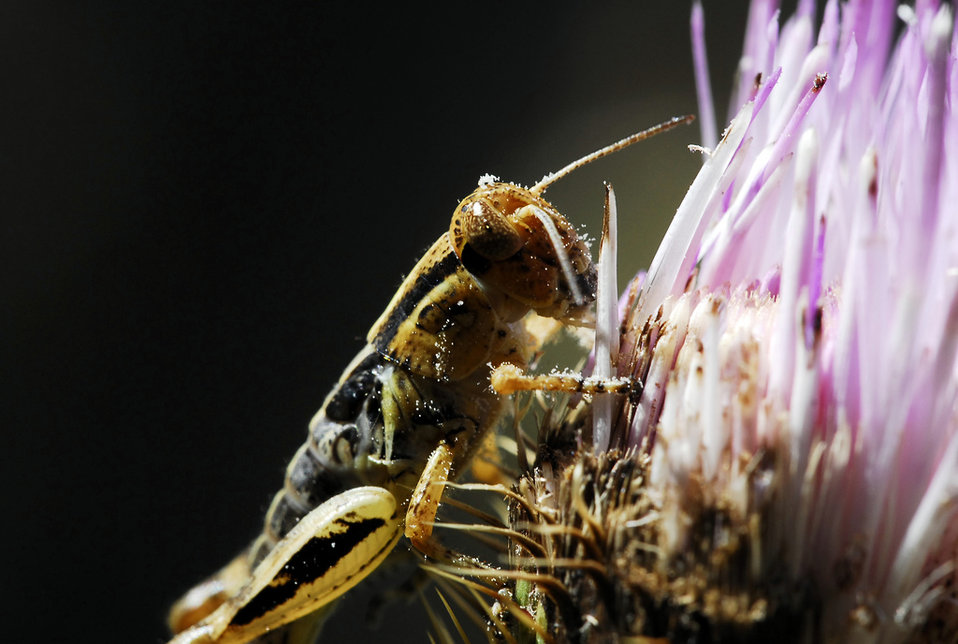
Grasshopper on Flower

A grasshopper hanging out on a flower.